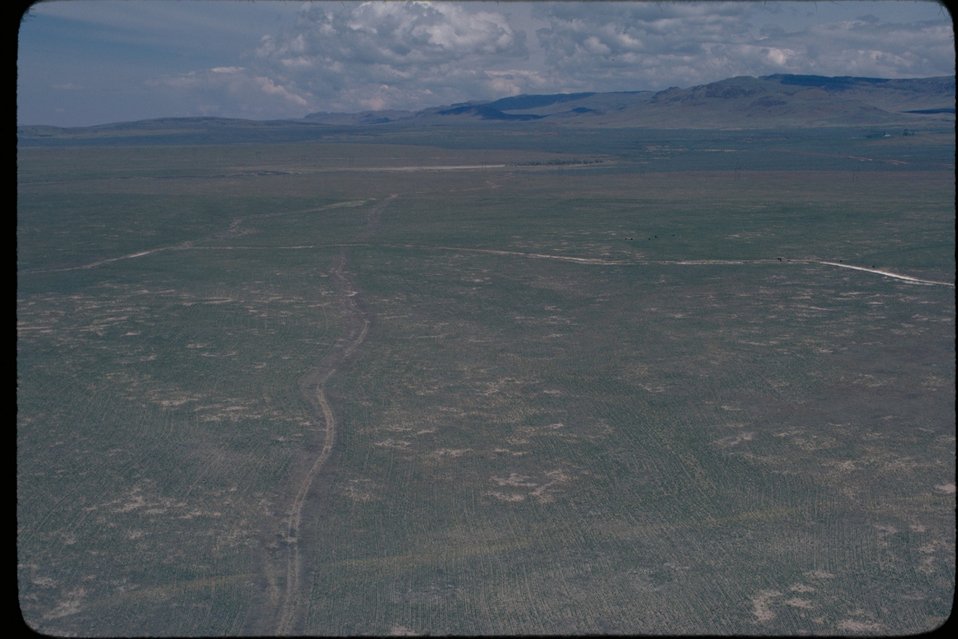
Oregon Trail South of Hot Springs Creek Reservoir Lower Snake River District